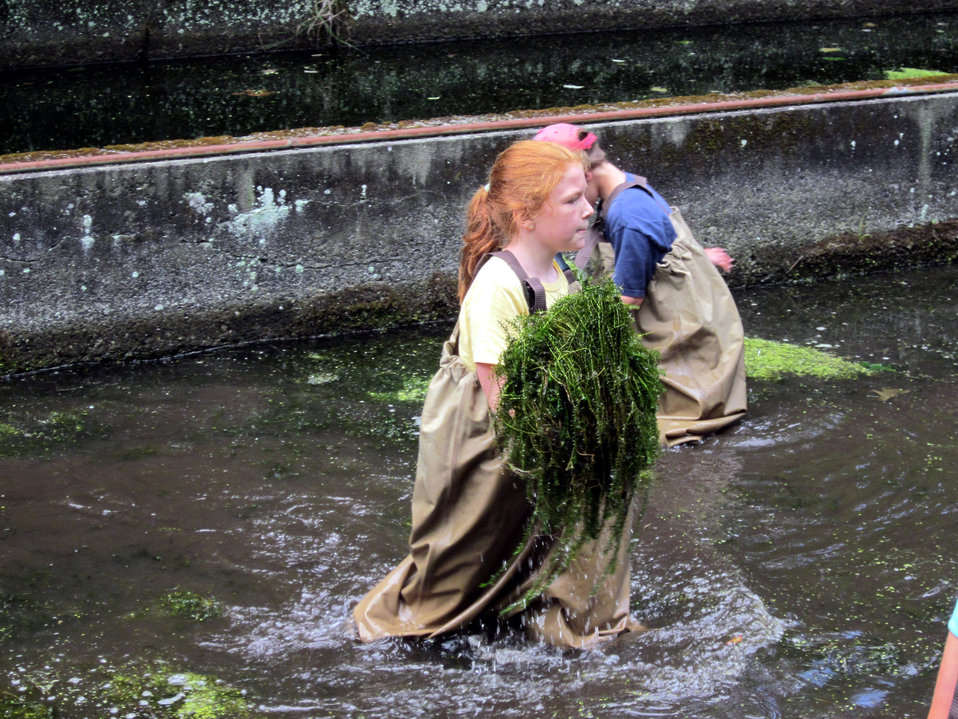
Clearing raceways

Sunderland, MA, July 26, 2012: Nature day campers from the Hitchcock Center for the Environment clear submerged plants that were clogging up outdoor fish raceways at Richard Cronin National Salmon Station.